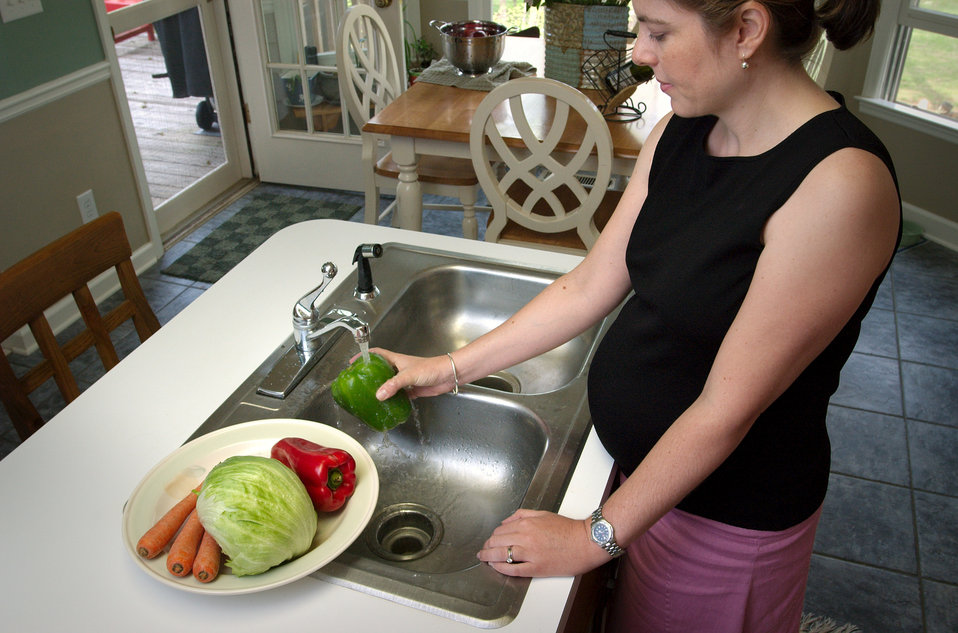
This photograph depicted a closer view of PHIL 7905 in which pregnant woman was in the process of washing a batch of assorted produce prior to the preparation of a salad. Note that the food preparation area around the sink is also kept clean, and free of unclean kitchen implements either inside, or outside the sink.Foodborne disease is caused by consuming contaminated foods or beverages. Many different disease-causing microbes, or pathogens, can contaminate foods, so there are many different foodborne infections. In addition, poisonous chemicals, or other harmful substances can cause foodborne diseases if they are present in food.